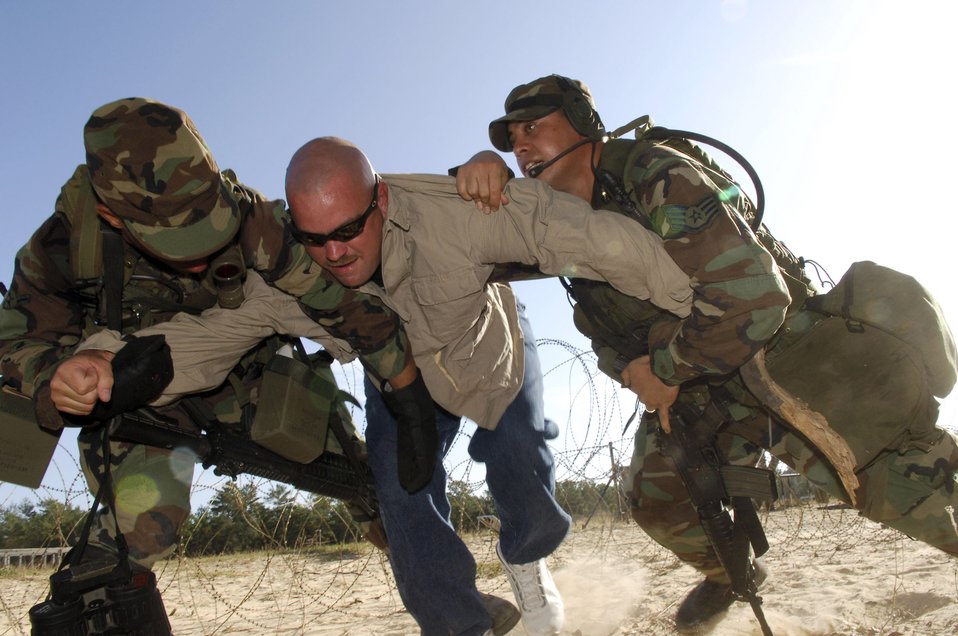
Brave defenders

EGLIN AIR FORCE BASE, Fla. (AFPN) -- Airman Lloyd Long and Staff Sgt. David Mendez apprehend a man who tried to illegally enter a restricted area as part of Brave Defender training. This is a two-week training course security forces and special forces Airmen attend before deployment. Airman Long and Sergeant Mendez are both with the 95th Security Forces Squadron at Edwards Air Force Base, Calif.